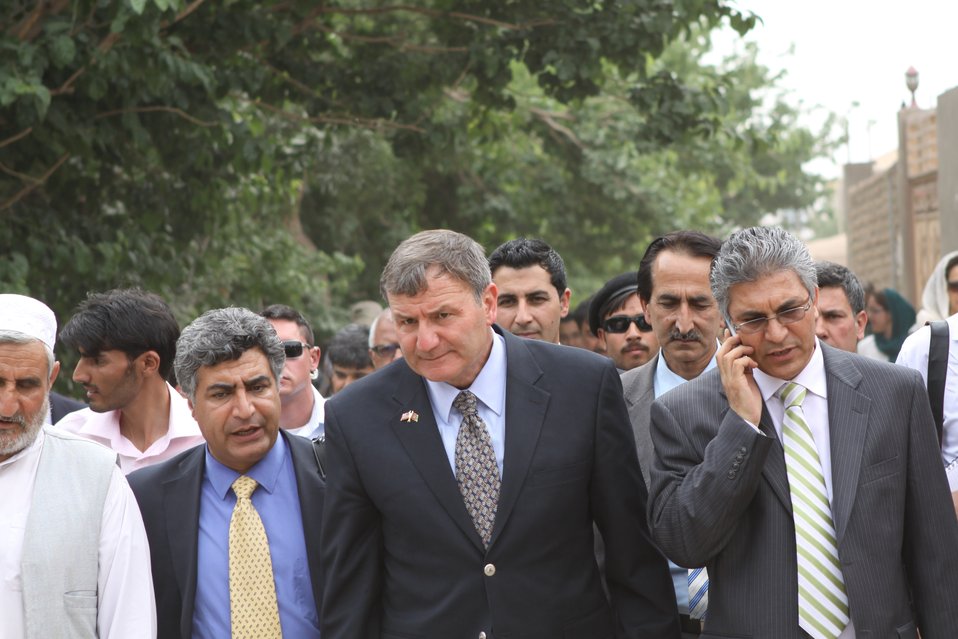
100525 Hirat Marble Conference 676